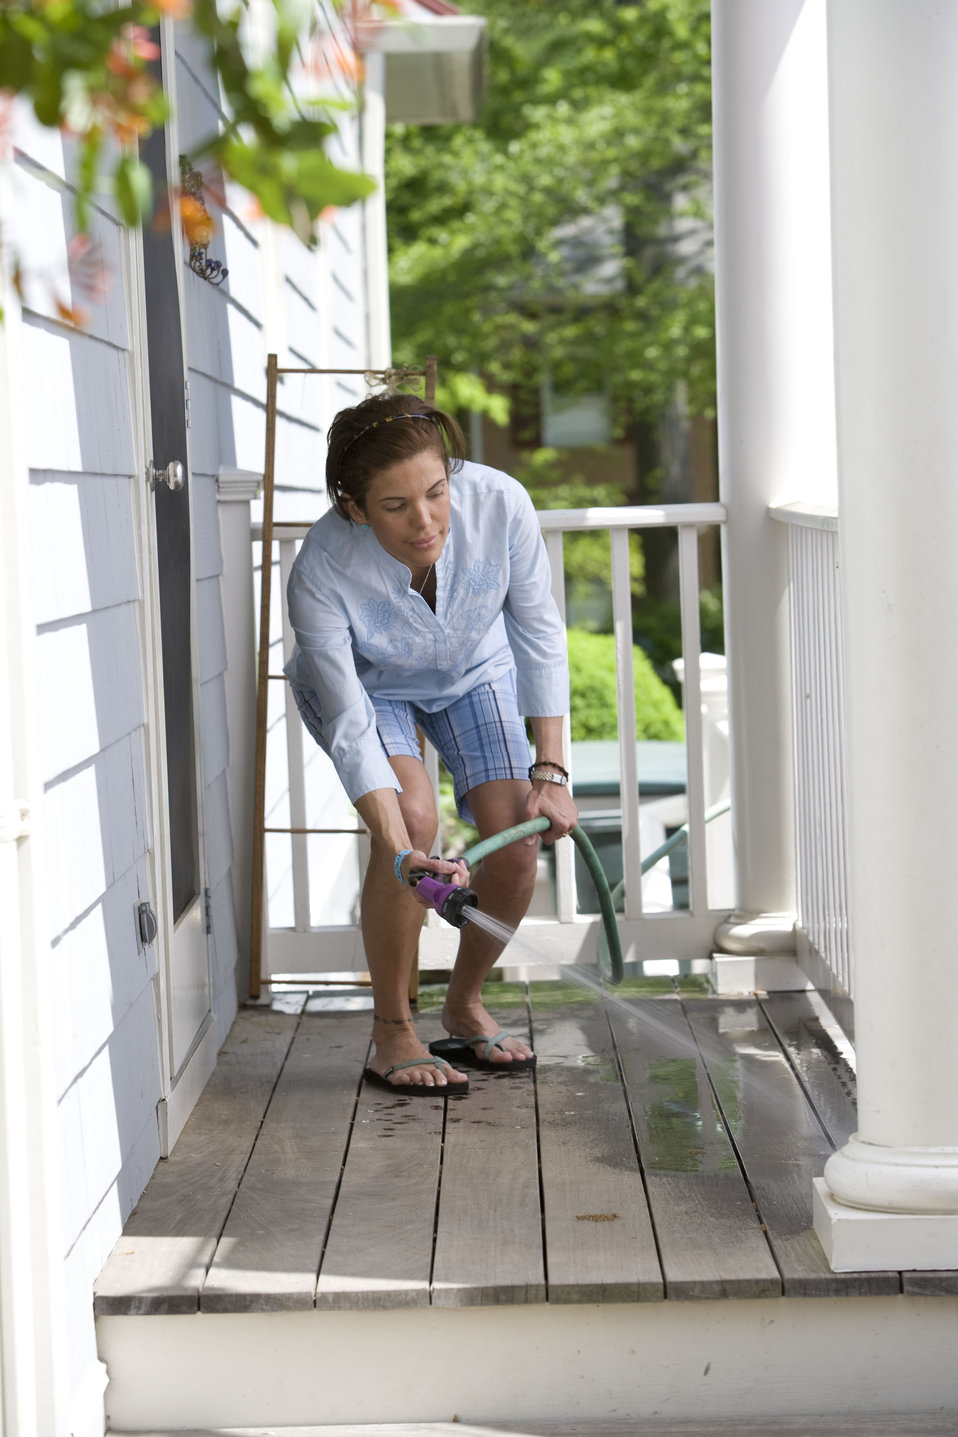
Home maintenance includes both the indoor, and as was the case here, outdoor environment, and is an ongoing process with which a homeowner need to keep up in order to provide for a healthy living space. Keeping your porch dust free reduces the amount of contaminants tracked into the house.